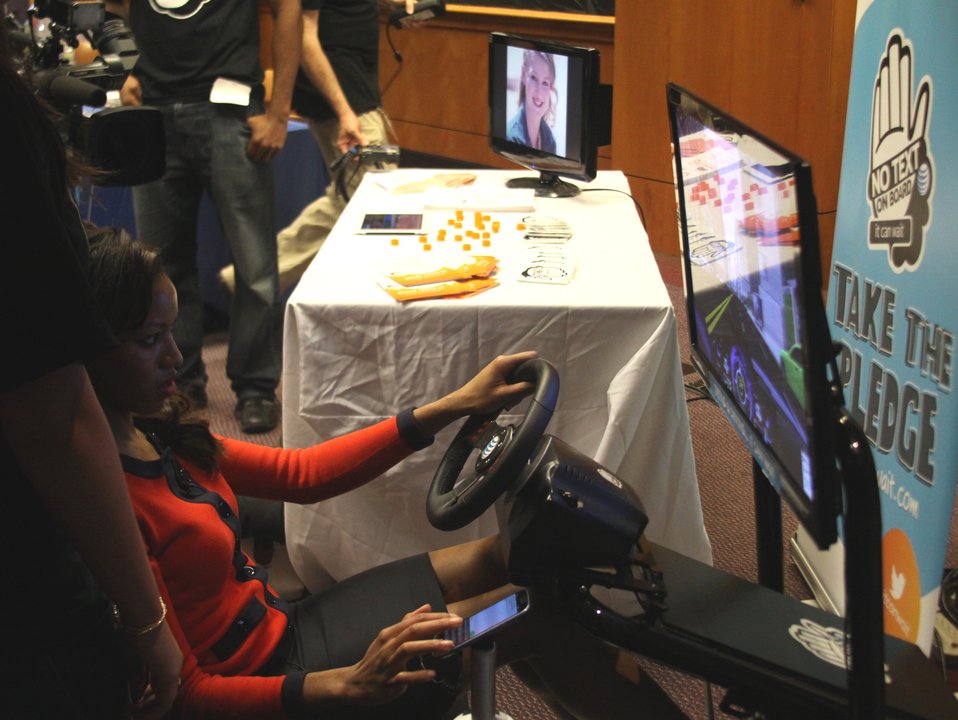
Distracted Driving Technology Showcase April 19, 2013